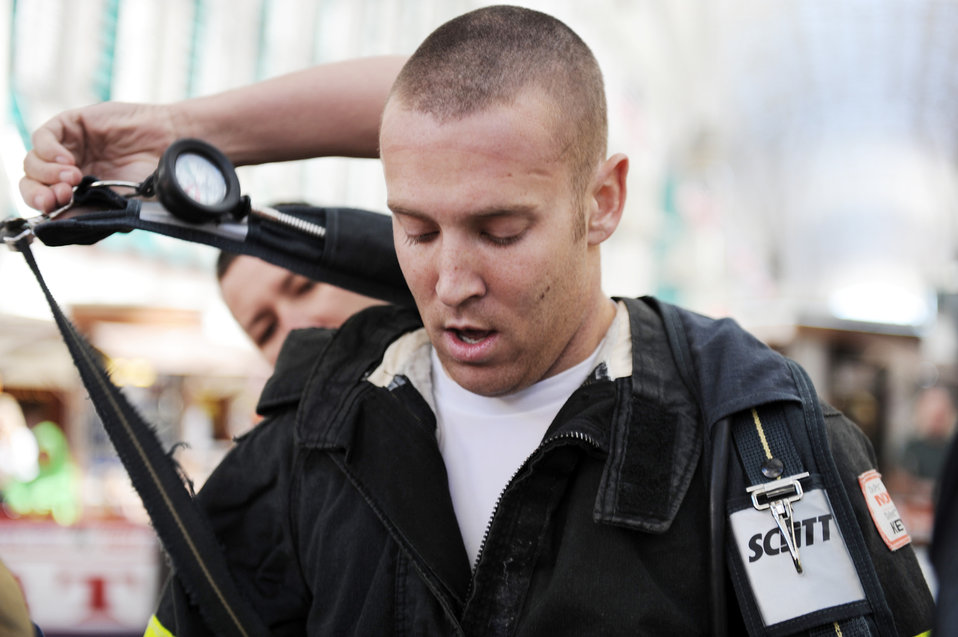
Airmen compete in 2009 Scott Firefighter Combat Challenge

Airman 1st Class Dan Baumgartner completes an individual firefighter event Nov. 17, 2009, at the 2009 Scott Firefighter Combat Challenge in Las Vegas. Airman Baumgartner is assigned to the 509th Civil Engineer Squadron at Whiteman Air Force Base, Mo.